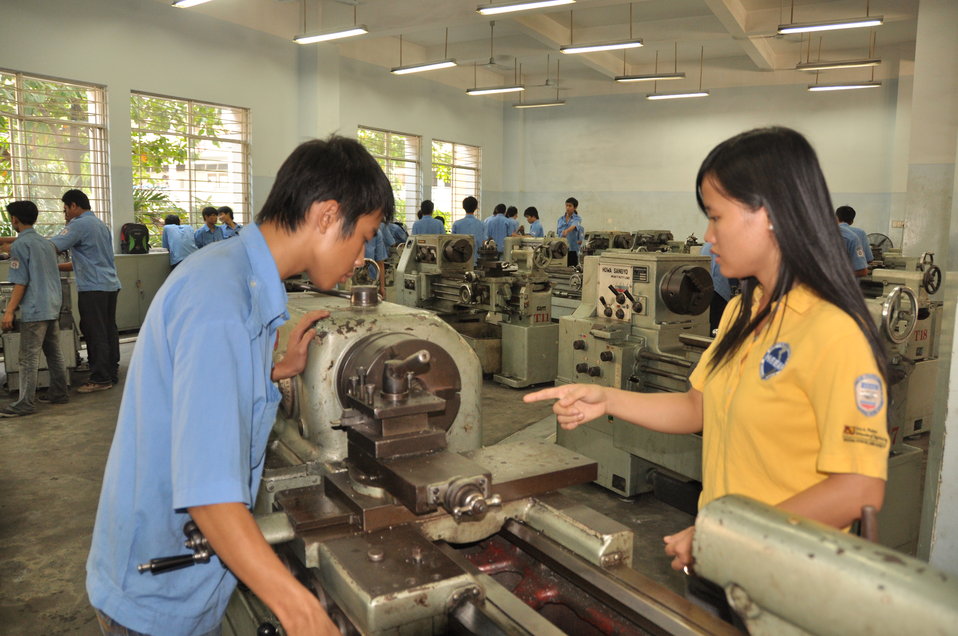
HEEAP Partner, Cao Thang Technical College

Ta Ngoc Y Thien, one of the faculty trained under the USAID-supported HEEAP program
Ho Chi Minh City, January 12, 2013